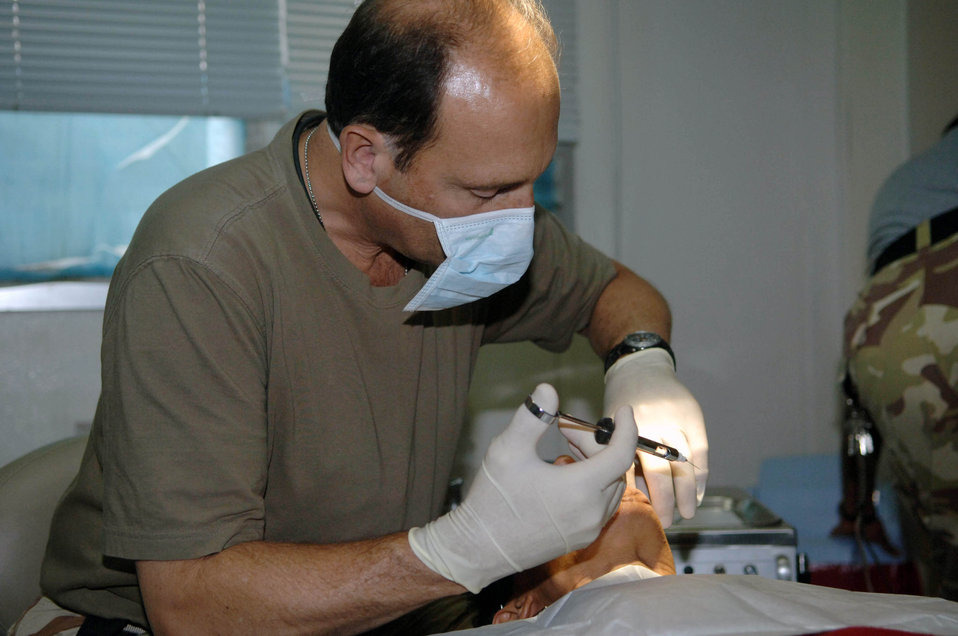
Air Force dental team cares for Iraqi counterparts

Lt. Col. Robert Beck prepares to numb a patient's mouth before performing a root canal Dec. 5 at Victory Base Complex, Iraq. Colonel Beck, a Special Operations Iraqi Transition Team dental adviser, is deployed from Offutt Air Force Base, Neb.